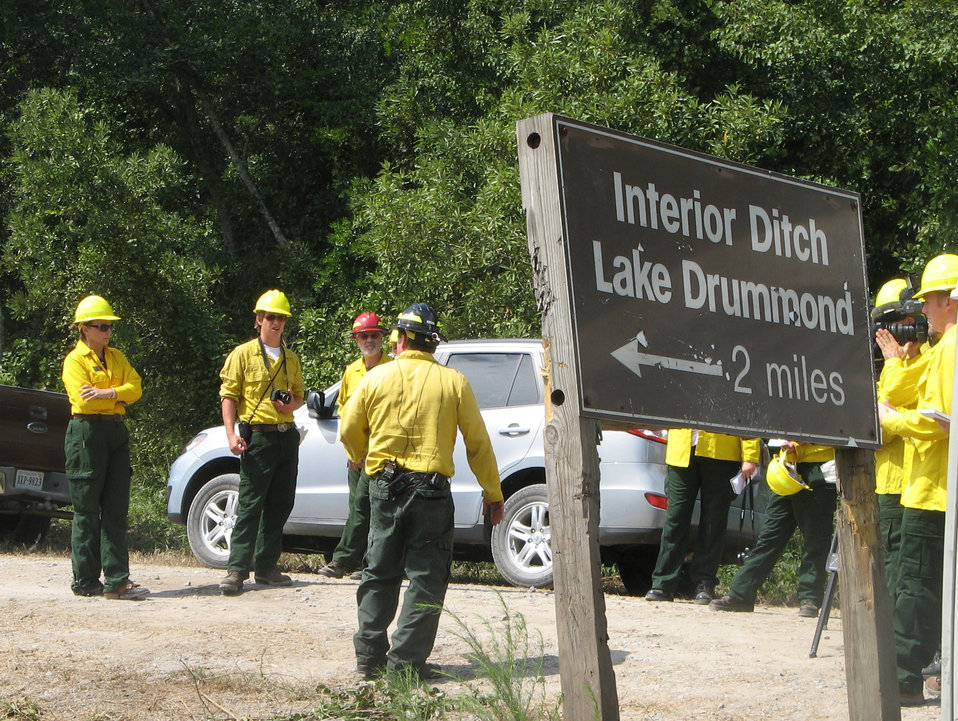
Lateral West media tour

Suffolk, VA, Aug. 11, 2011. Jon Wallace of the U.S. Fish and Wildlife Service talks to the media about how firefighters will flood ditches and use high volume pumps to saturate fire burning deep in peat soils on Great Dismal Swamp National Wildlife Refuge.